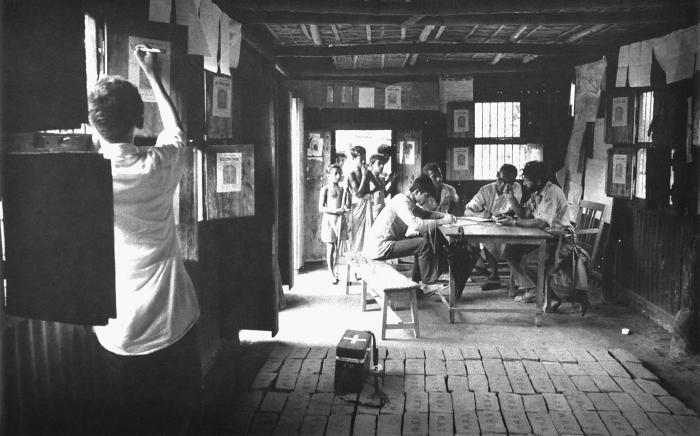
This 1975 image was captured within the interior of a thana field office, and depicted a number of men analyzing data at a table, and another man charting data on the left. The keeping of detailed records was extremely important, and is one of the hallmarks of properly practiced epidemiologic science. Smallpox cases that were uncovered had to be followed to a successful outcome, as well as anyone associate with close contact with any confirmed smallpox case.